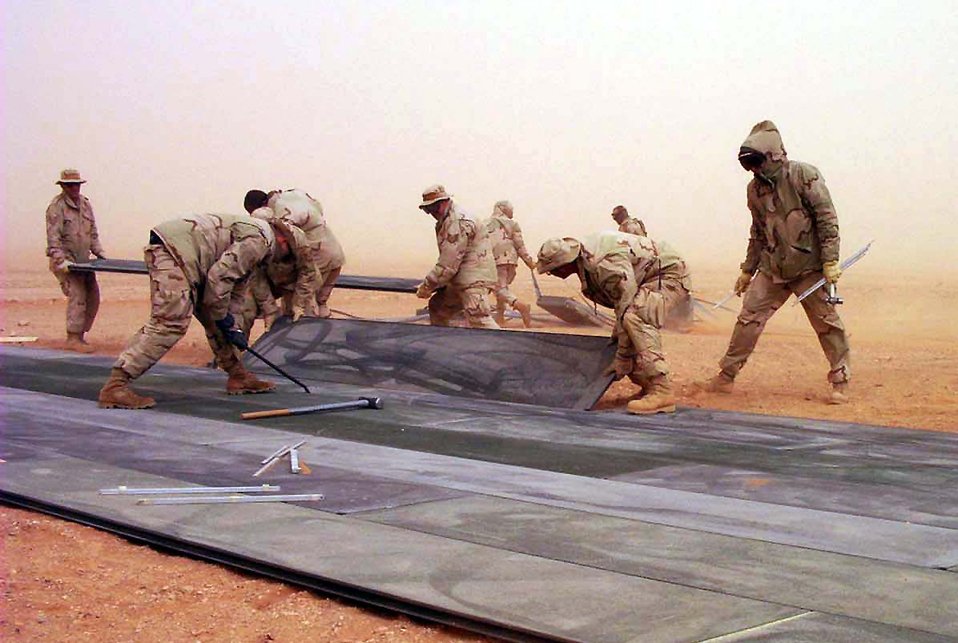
A runway runs through it

OPERATION IRAQI FREEDOM -- Deployed airmen of the 447th Air Expeditionary Group lay a portion of a temporary runway at a forward-deployed location during a driving wind storm. The group's job is to provide a place from which warfighters can operate.